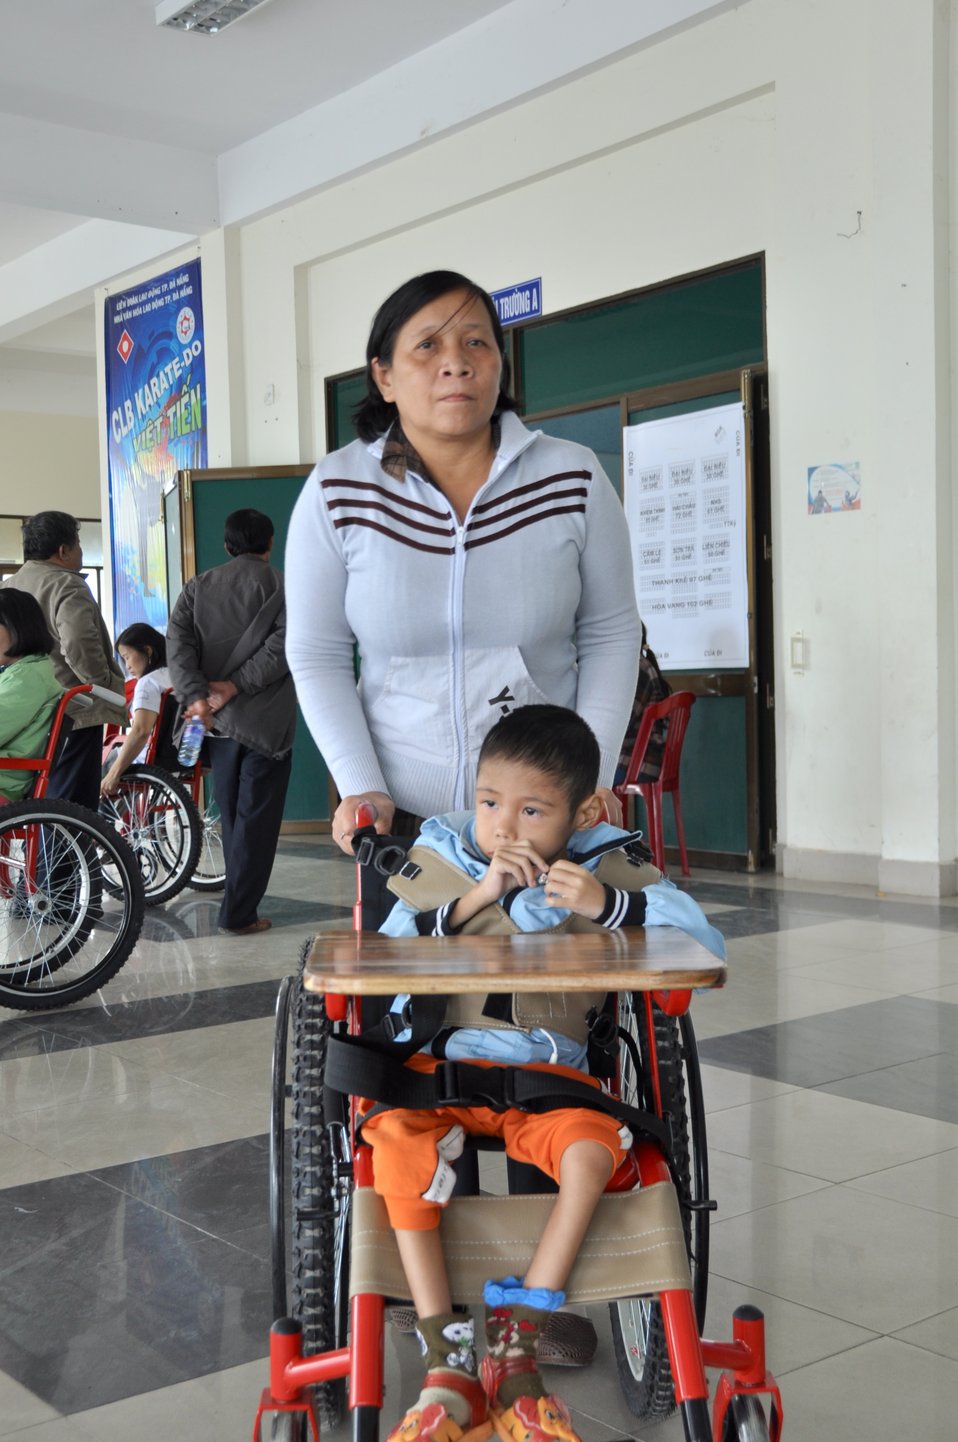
USAID supports delivery of wheelchairs to people with disabilities in Danang.

Danang, December 3, 2013.